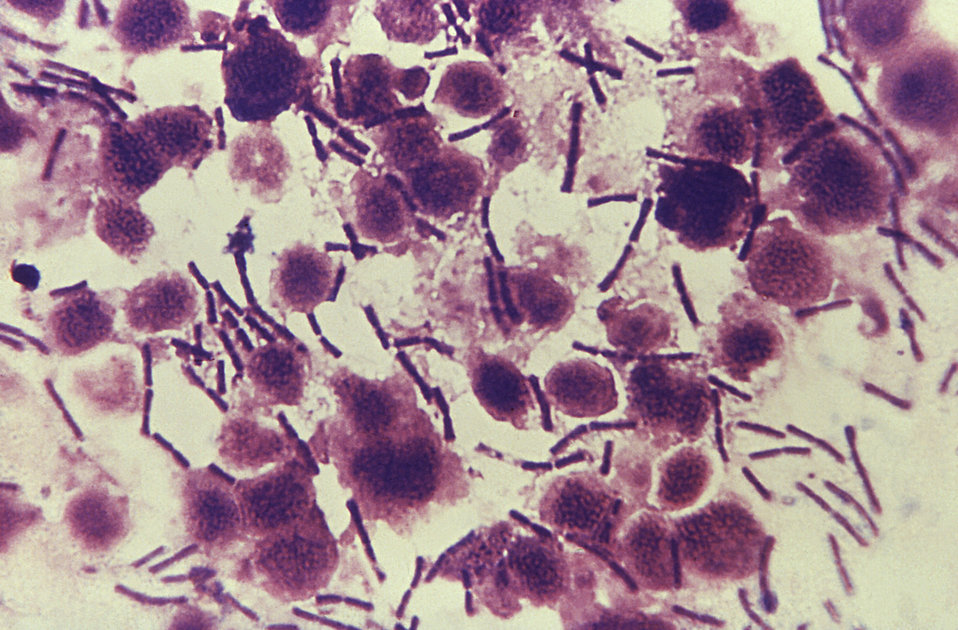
This photomicrograph reveals numerous rod-shaped Bacillus anthracis bacteria, some that had linked together to form chains, while others remained solitary.